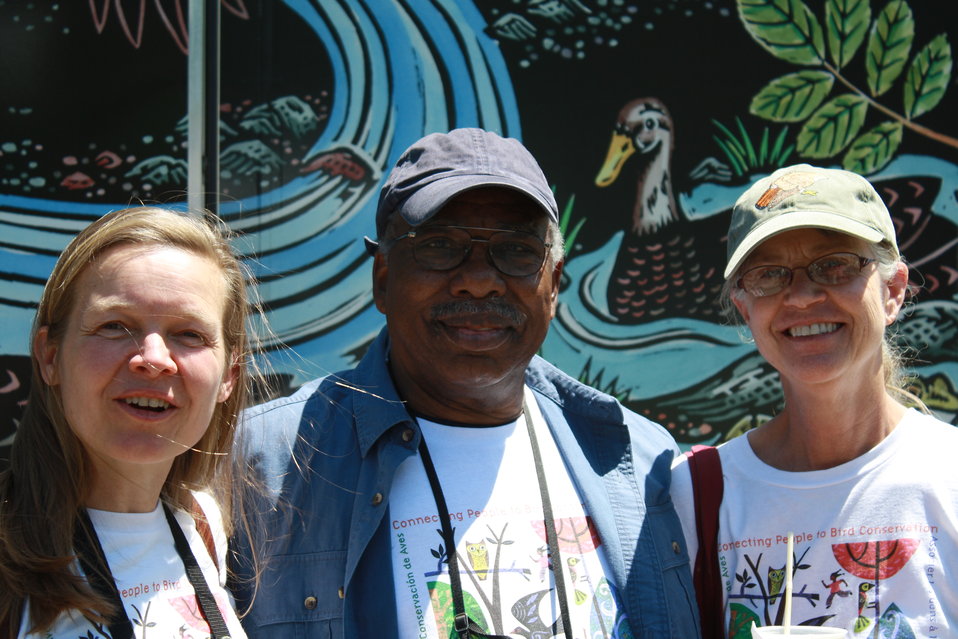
Folks in front of WOW Express

WOW Express at Keney Park in Hartford, Conn.